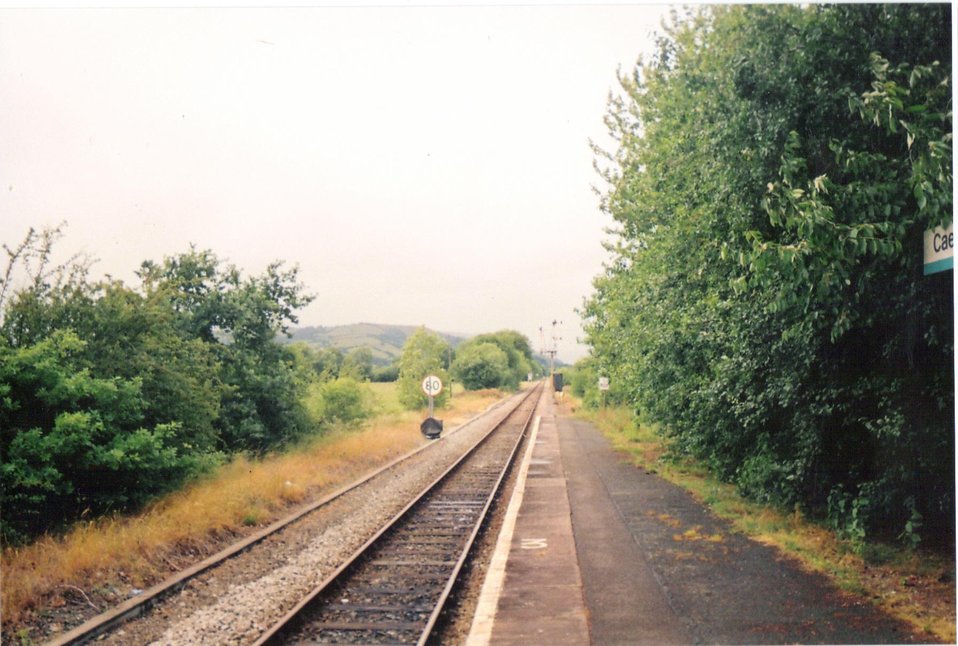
I took this picture of Caersws station my self in the early 2000s and donate it to the public domain.